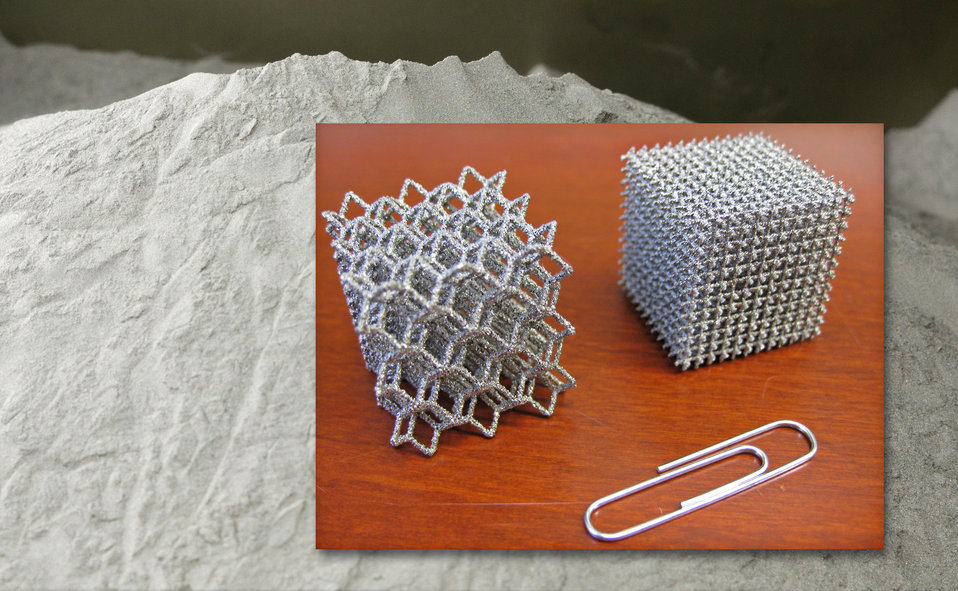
Material properties of metal powders for use in additive manufacturing

Deposited layer by layer, metal powder can be used to create parts of different shapes and sizes. NIST research projects focus on characterizing the material properties of the powders used for additive manufacturing and the resulting products and improving the performance of additive manufacturing equipment and processes.